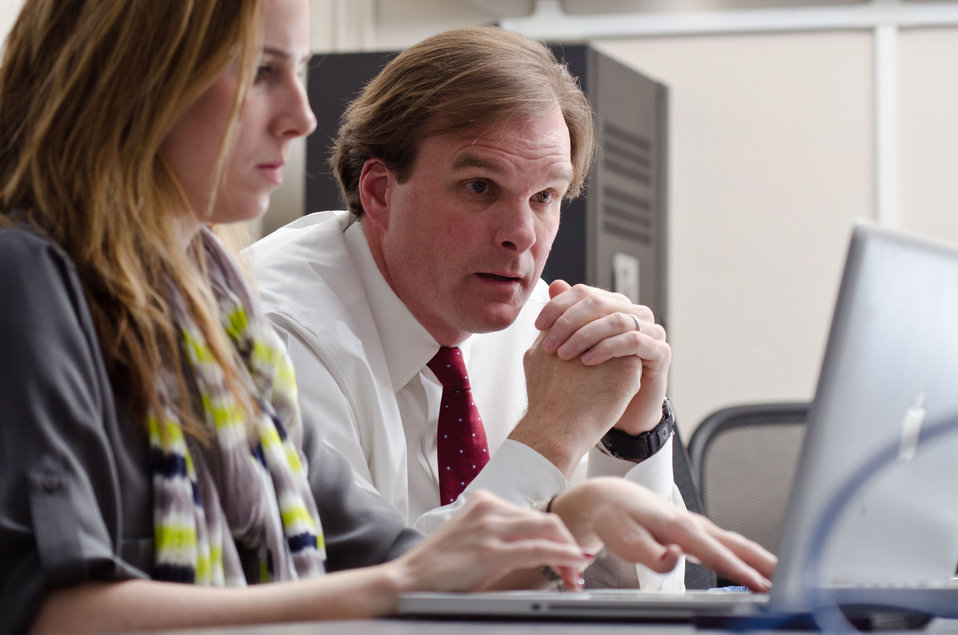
(Right-left) U.S. Department of Agriculture Senior Advisor to the Secretary for Environment and Climate Change Office Robert Bonnie replies to an online question, while Office of Communications Director of Web Communications Amanda Eamich enters the response, during a live Virtual Office Hours session on Twitter, in Washington, D.C. on Thursday, November 29, 2012. The event provided a question and answer opportunity and highlighted U.S. Department of Agriculture's (USDA) record on conservation achievements and efforts to reconnect Americans to the great outdoors were answered during the event. Questions were submitted live and in advance to the @USDA Twitter account using the hashtag #AskUSDA.